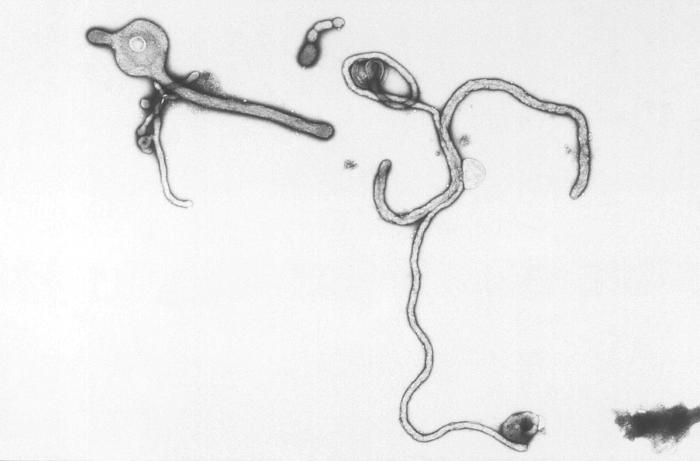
Created by CDC microbiologist Charles Humphrey, this negatively-stained transmission electron micrograph (TEM) revealed some of the ultrastructural curvilinear morphologic features displayed by the Ebola virus discovered from the Ivory Coast of Africa.